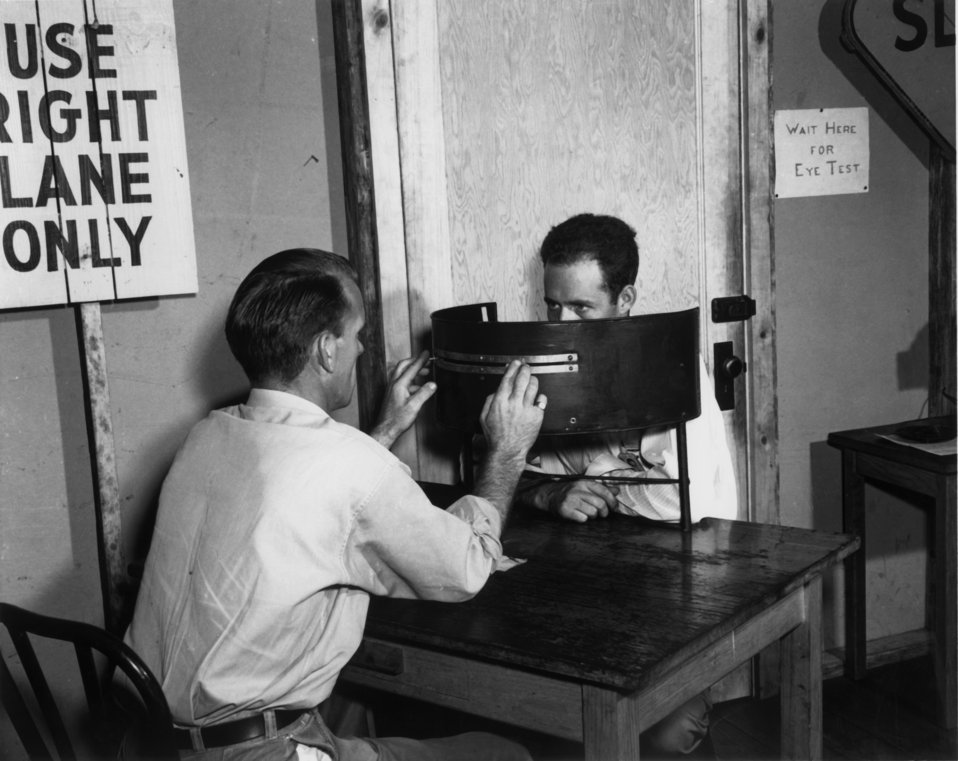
Drivers permit bureau/ eye test

pro 870-3 DOE photo Ed Westcott 8/6/45
Oak Ridge Tennessee